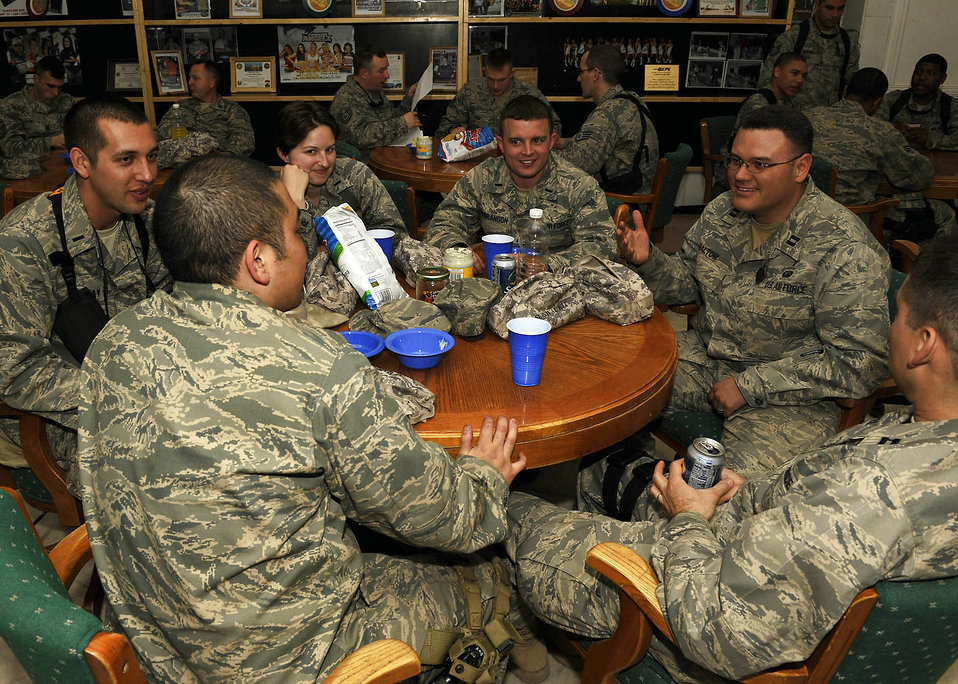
Chapel team goes outside wire for duty

Chaplain (Capt.) David Haltom provides spiritual guidance to a group of joint expeditionary tasked Airmen Feb. 23 at Camp Slayer, Iraq. Chaplain Haltom is the 732nd Air Expeditionary Group chaplain.